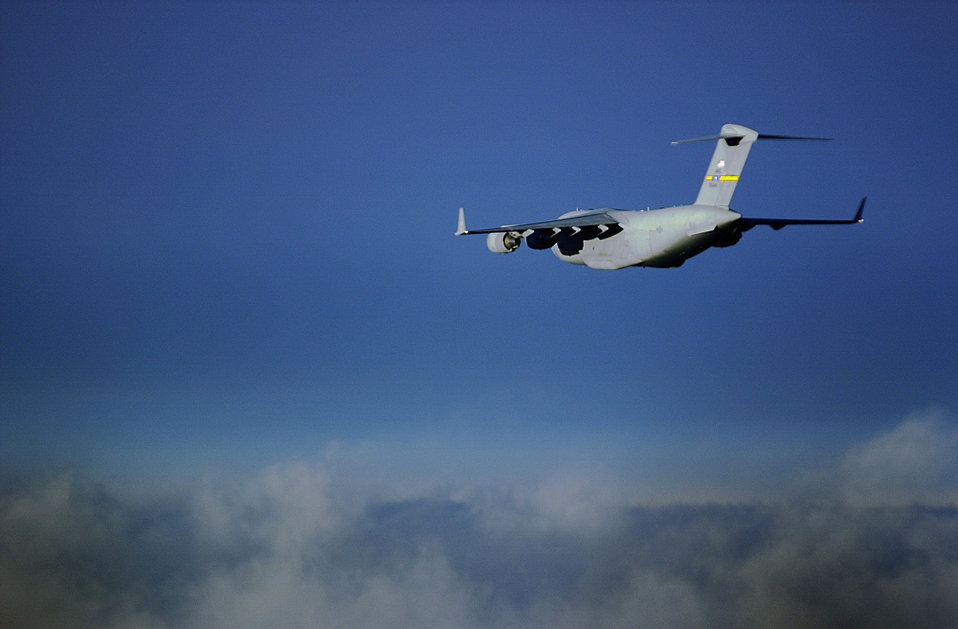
Peace Shield

OVER THE ATLANTIC OCEAN -- A C-17 Globemaster III from the 437th Airlift Wing, Charleston Air Force Base, S.C., flys to the Ukraine loaded with 82nd Airborn Division Paratroopers July 16, 2000. Paratroopers are jumping in the Ukraine to support the exercise Peace Shield 2000. Peace Shield is a Joint Peace Keeping exercise involving 22 different countries.